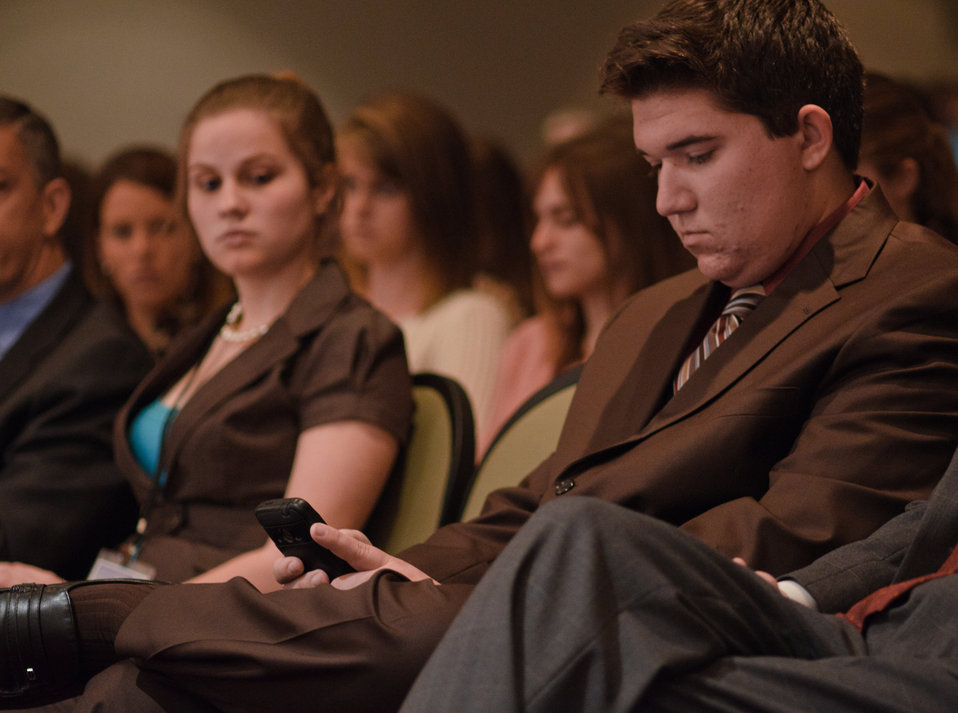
Ashlie Hardy (left) of the National 4-H Conference Operations Team, looks on as 4-H Youth Development Program President Jared Padgett (right) and others in the audience went to their mobile web devices when U.S. Department of Agriculture (USDA) Secretary Tom Vilsack recommended a Let’s Move website specifically for the 4-H on Tuesday, April 5, 2011, in Washington, DC. The conference is the premier youth development opportunity of the USDA. Aged between 15-19 years old the attendees were selected by various means by their states to be their delegates at the conference.